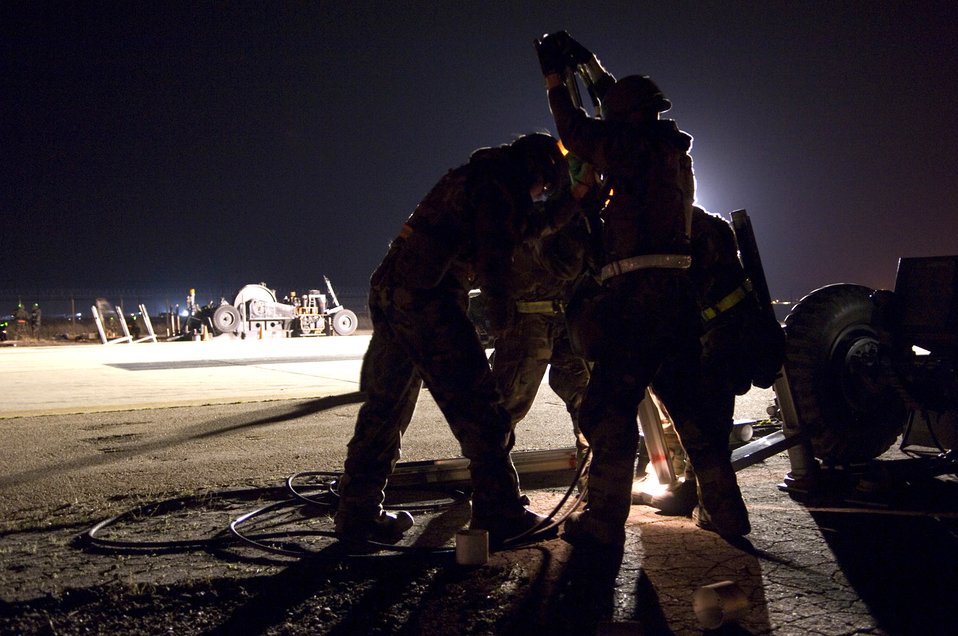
Repair team keeps Kunsan mission going

Members of the 8th Civil Engineer Squadron Airfield Damage Repair team install anchors in the Mobile Aircraft Arresting System April 19 at Kunsan Air Base, South Korea. The MAAS contains the cable used to stop damaged aircraft that cannot stop on their own during landing. Kunsan AB is currently undergoing an Operational Readiness Inspection to test the 8th Fighter Wing's ability to conduct its wartime mission. During exercises, ADR teams perform several functions including crater repair after simulated attacks and airfield lighting during simulated power outages, making it possible to get aircraft back in the air quickly.